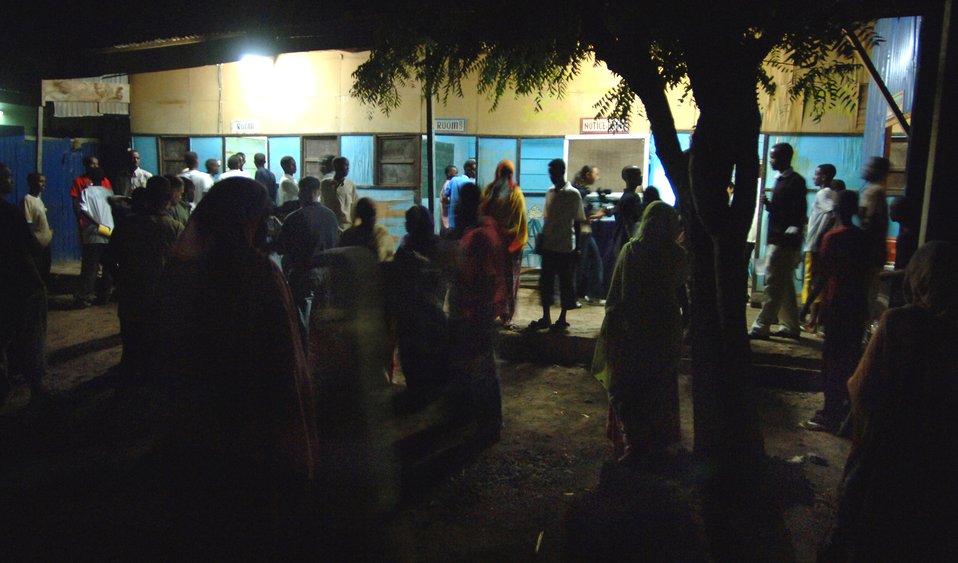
Americans, Djiboutians build relationships

At the Horsed Private School of English in Djibouti, Africa, U.S. servicemembers deployed to Camp Lemonier, Djibouti, volunteer off-duty time to take part in an English discussion forum with local students who are interested in learning about American culture and improving their English speaking skills.